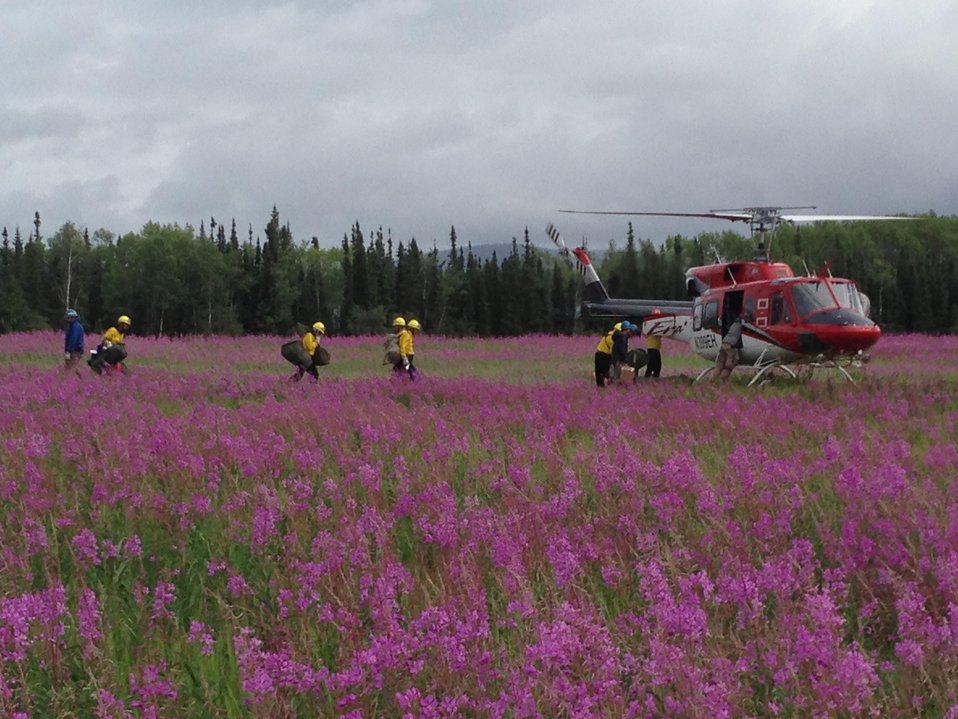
Wildland firefighters board a helicopter at the Stuart Creek Fire. The Stewart Creek Fire located 25 miles east of North Pole, AK began on Jun. 19, 2013 due to human causes and has consumed an estimated 85, 475 acres. The fire is approximately 71% contained.